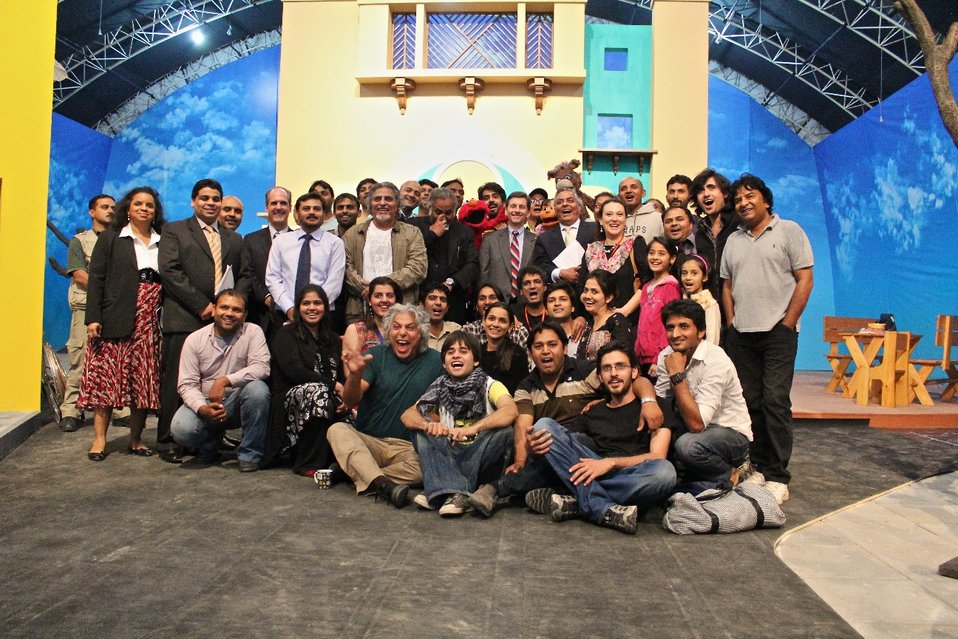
Andy with Sim Sim Hamara team and characters